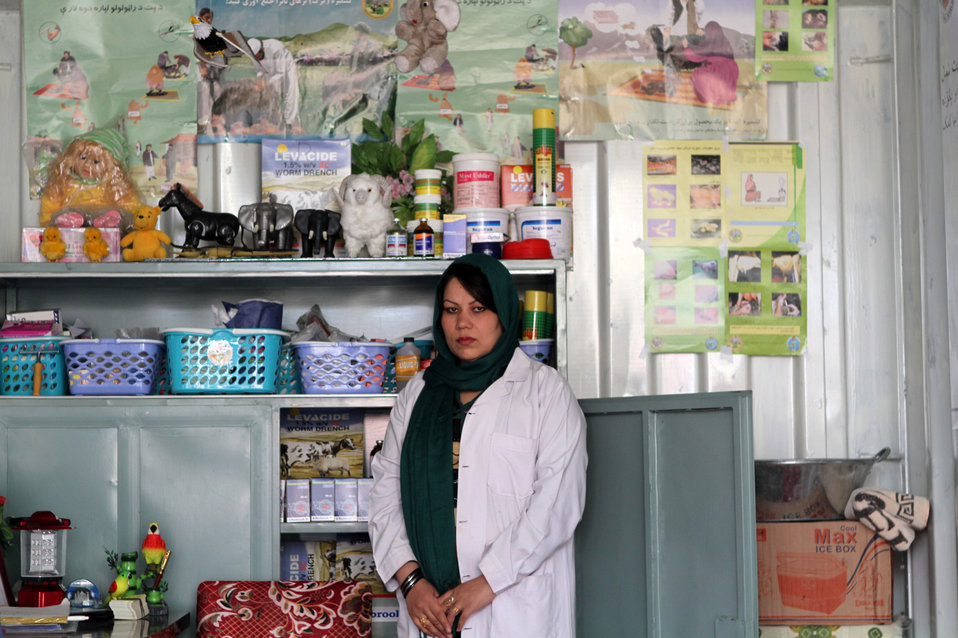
Development of Veterinary...